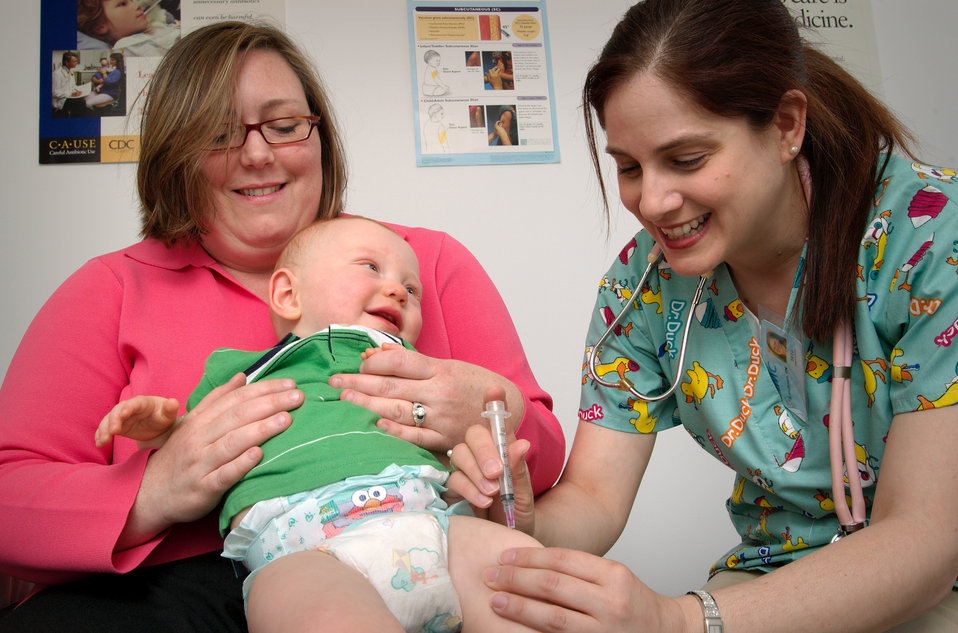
While being held on his mother's lap, this infant was receiving an intramuscular immunization in his right thigh muscle by a qualified nurse. The nurse had immobilized the infant's leg by using the palm of her hand, thereby stabilizing the injection site, while simultaneously distracting the infant from the action at hand.Is it okay for my baby to have so many shots at once?